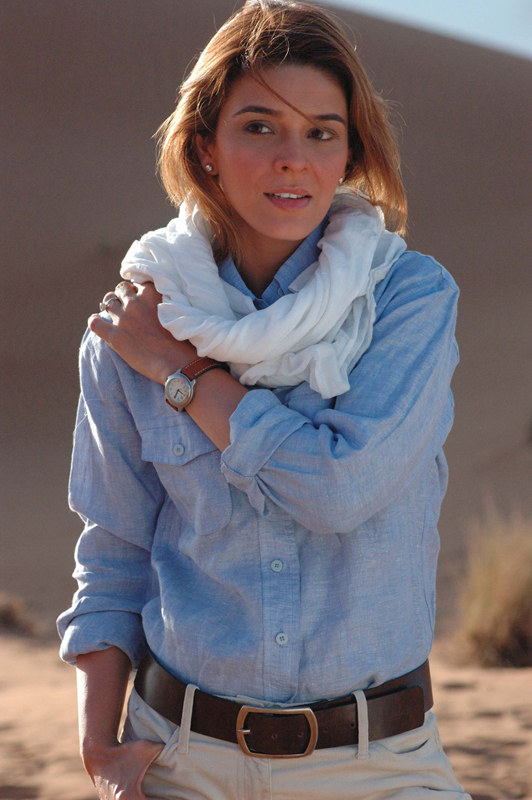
Raageshwari on a safari shoot